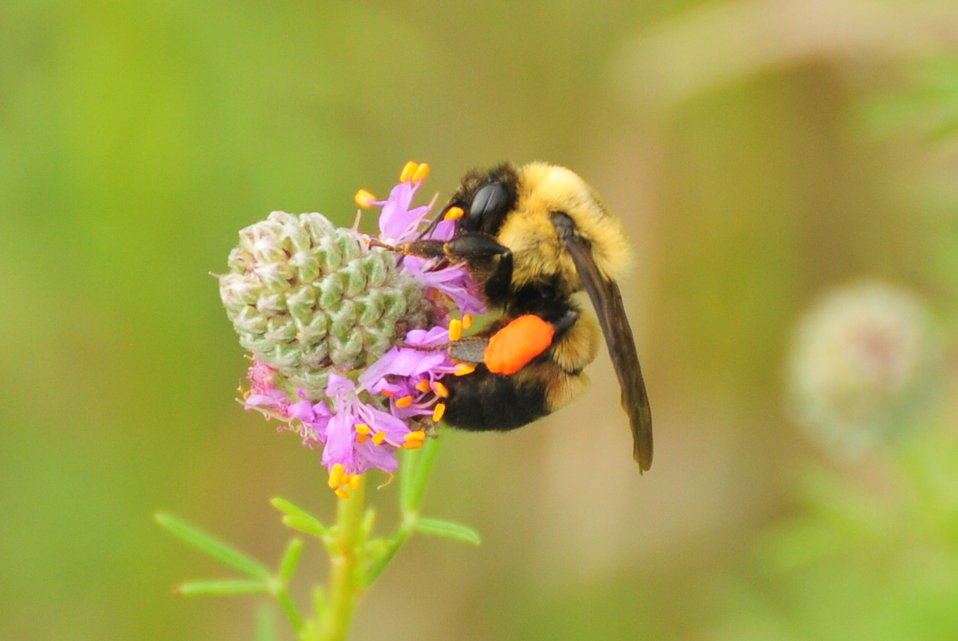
Bee on Purple Prairie Clover

A bee collecting pollen from purple prairie clover. Note the large orange accumulation of pollen on its hind leg.